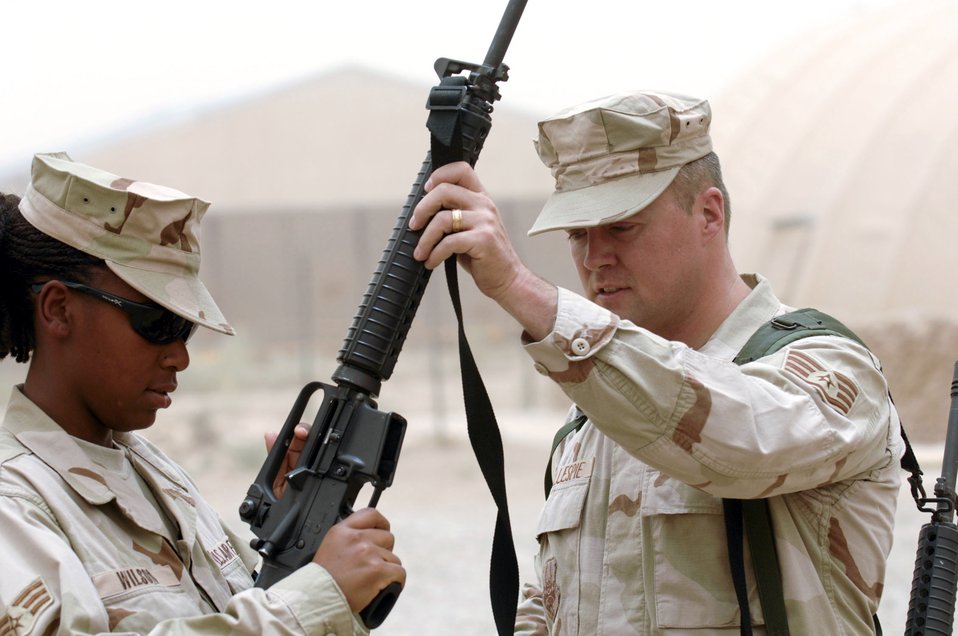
Fully armed

Staff Sgt. Allan Gillespie passes Senior Airman Ashley Wilson her M-16 rifle during a base-wide arming exercise June 14 at Ali Air Base, Iraq. Both are members of the 407th Expeditionary Communications Squadron. Ali AB Airmen participated in the exercise to help fine-tune weapons distributing procedures in case of a real-world threat to the base.